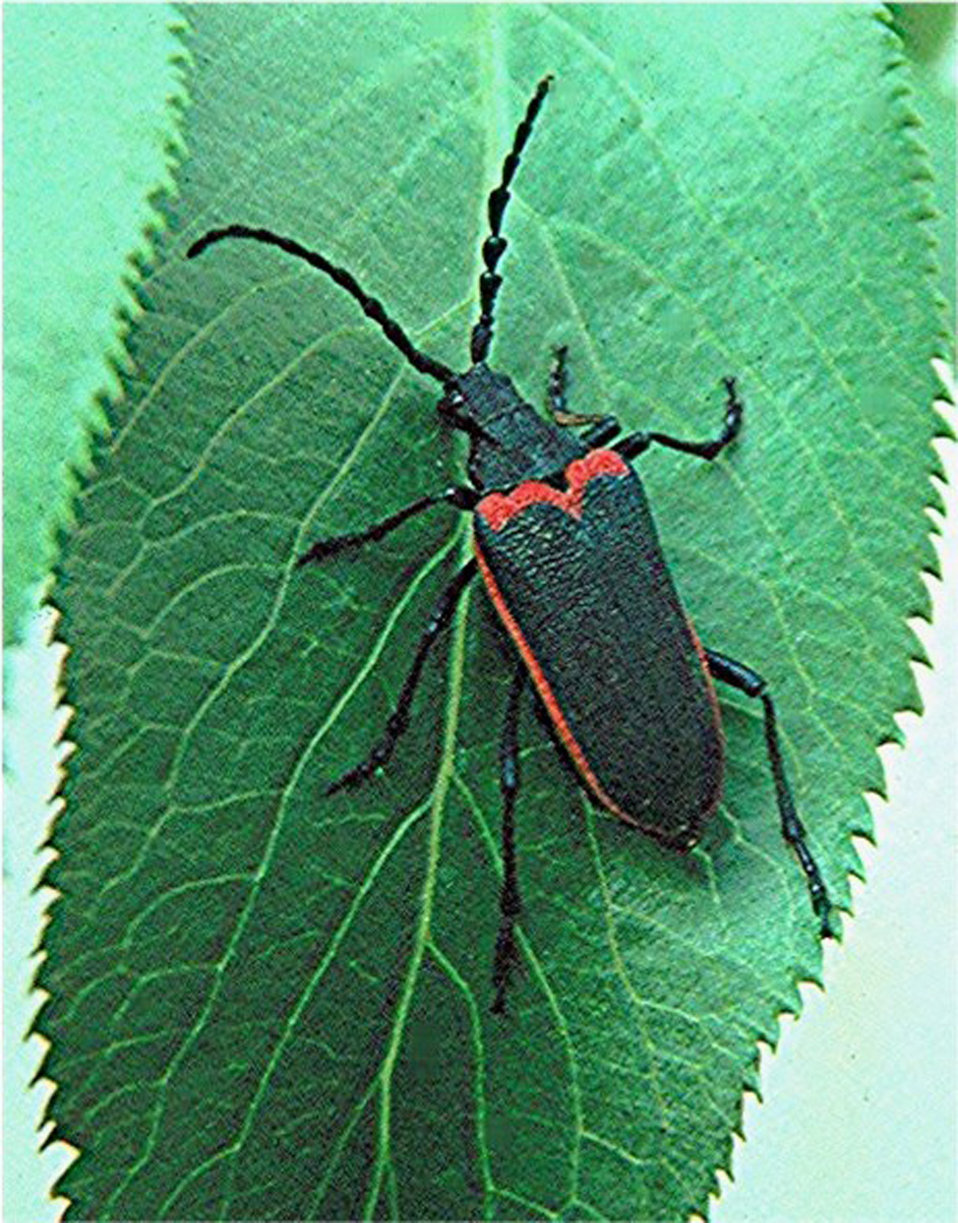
Valley Elderberry Longhorned Beetle female

The Valley Elderberry Longhorn beetle was listed in 1980 as a threatened species under the Endangered Species Act. It is found only in California’s Central Valley, where it depends on a single species for food and shelter, blue elderberry bushes that grow along Central Valley watercourses.